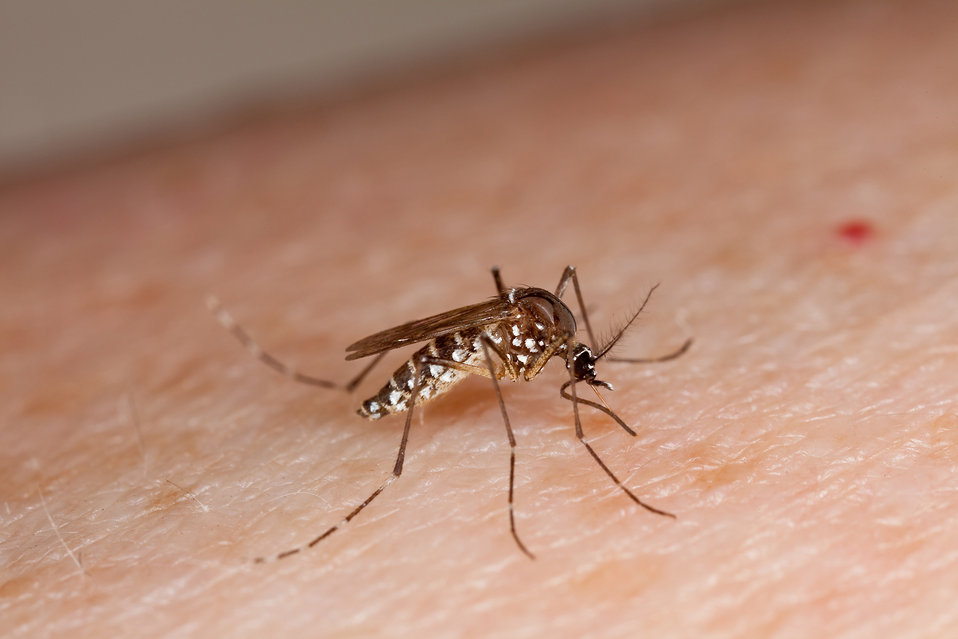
This female mosquito (Aedes aegypti) is just starting to feed on a person’s arm on May 23, 2012. The mosquito can spread several diseases as it travels from person to person.